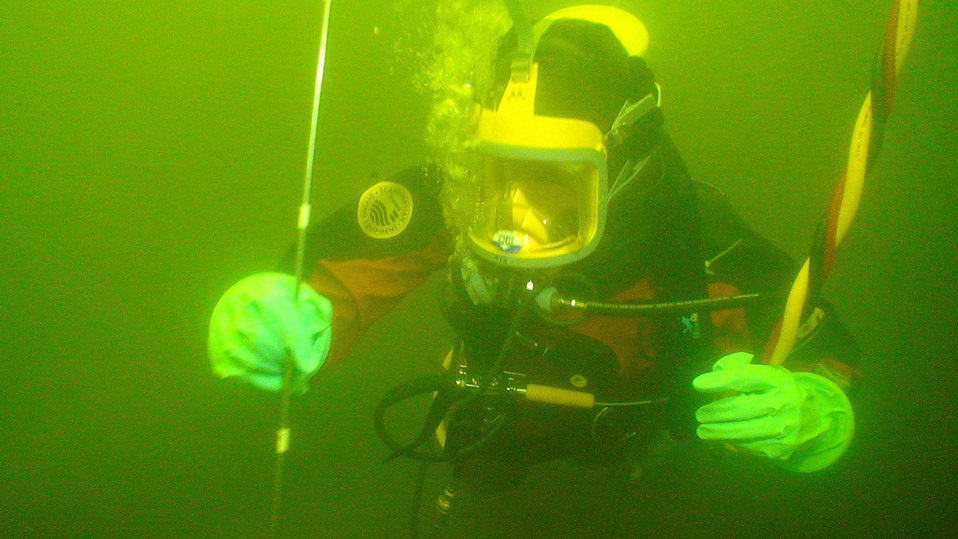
What's a piezometer?

A piezometer is a scientific instrument designed to measure shallow groundwater pollutant levels. In this photo EPA Diver Sean Sheldrake is doing exactly that.

Surface supplied air equipment is extremely helpful in murky underwater conditions like this.

In highly contaminated areas, or during emergency response operations surface supplied air allows the divers to work underwater for longer periods of time rather than relying on the limited amount inside scuba tanks.